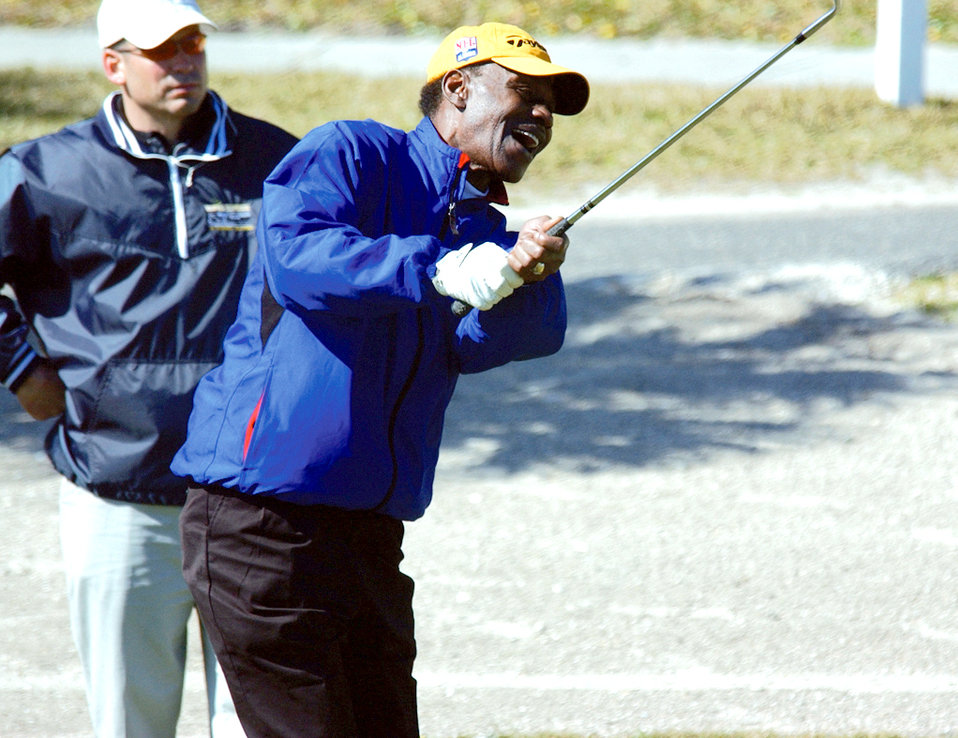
Tee time brings military, NFL together

TYNDALL AIR FORCE BASE, Fla. -- NFL Hall of Fame member Charley Taylor, a former Washington Redskins wide receiver, and Navy Chief Petty Officer David Williams, from Blount Island Command Marine Base, Fla., hit the links Feb. 5 at the hall of fame's annual tournament at the Amelia Island Plantation golf course in Jacksonville, Fla.